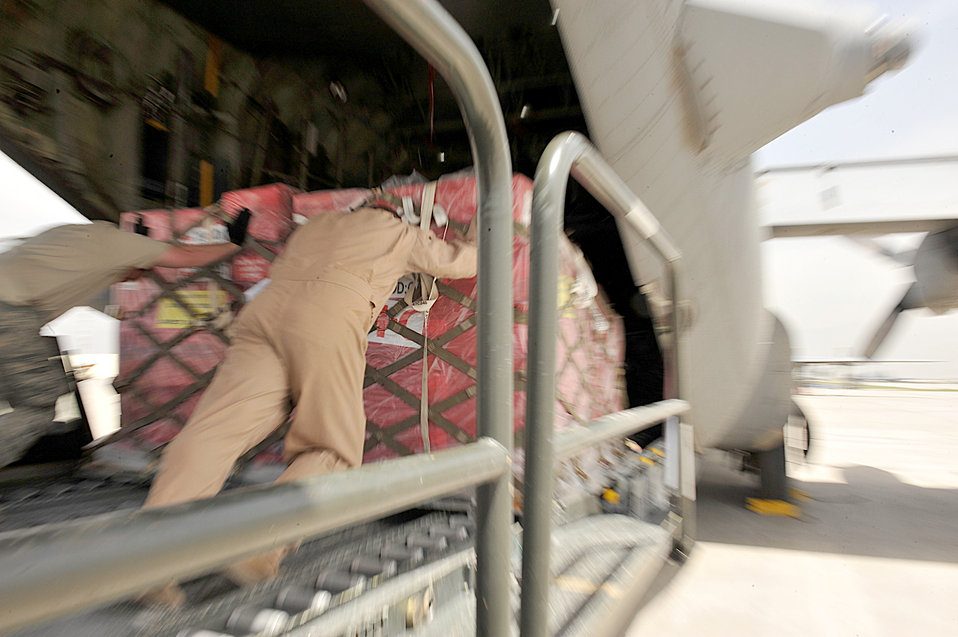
Tajik relief efforts

Master Sgt. Mark Norman (right) and an aerial-port worker load a pallet filled with medical supplies, hygiene kits and water onto a C-130 Hercules May 21, 2010, destined for flood relief victims in Tajikistan. Sergeant Norman is loadmaster deployed to the 774th Airlift Squadron at Bagram Airfield, Afghanistan.